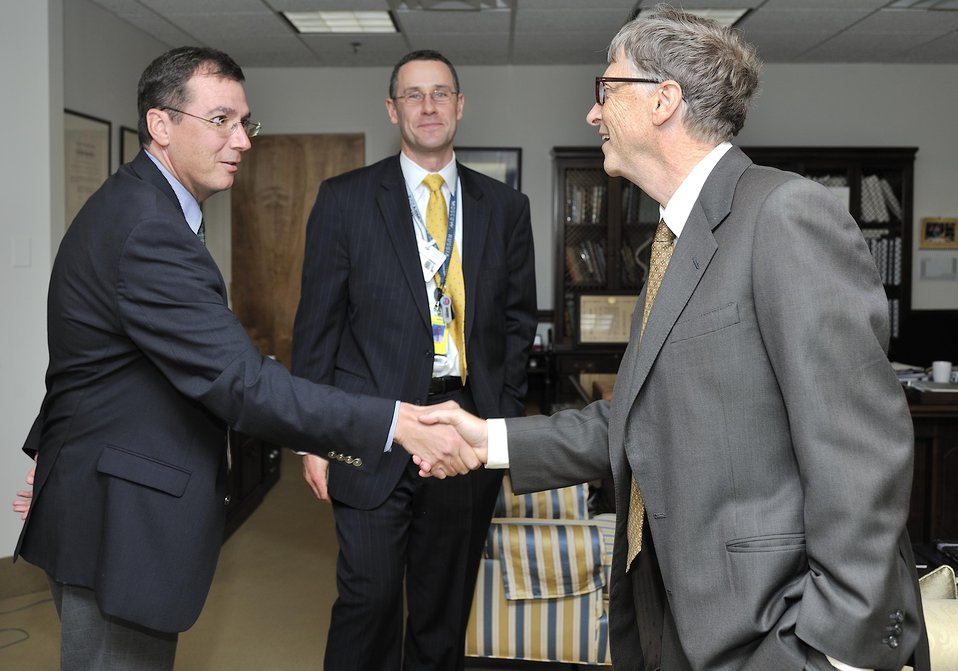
Ken Shipp/DOE Photo